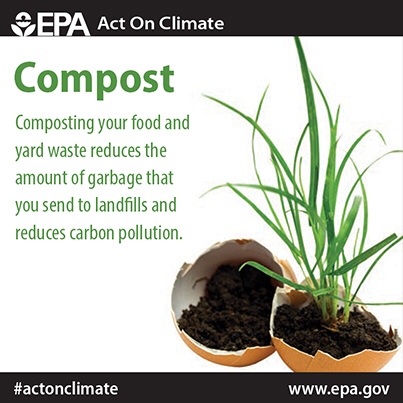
Composting food and yard waste reduces garbage in landfills and carbon pollution. Try it for yourself and #ActOnClimate!